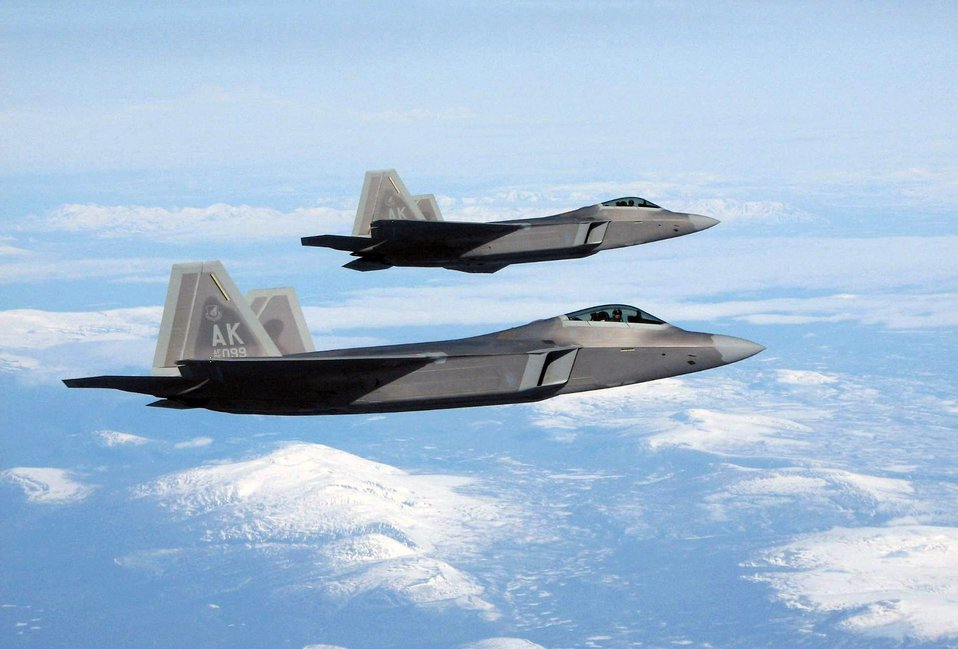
A lethal presence

Two F-22 Raptors fly a Northern Edge 2008 training mission over Alaska May 8. The aircraft are from the 3rd Wing at Elmendorf Air Force Base, Alaska.